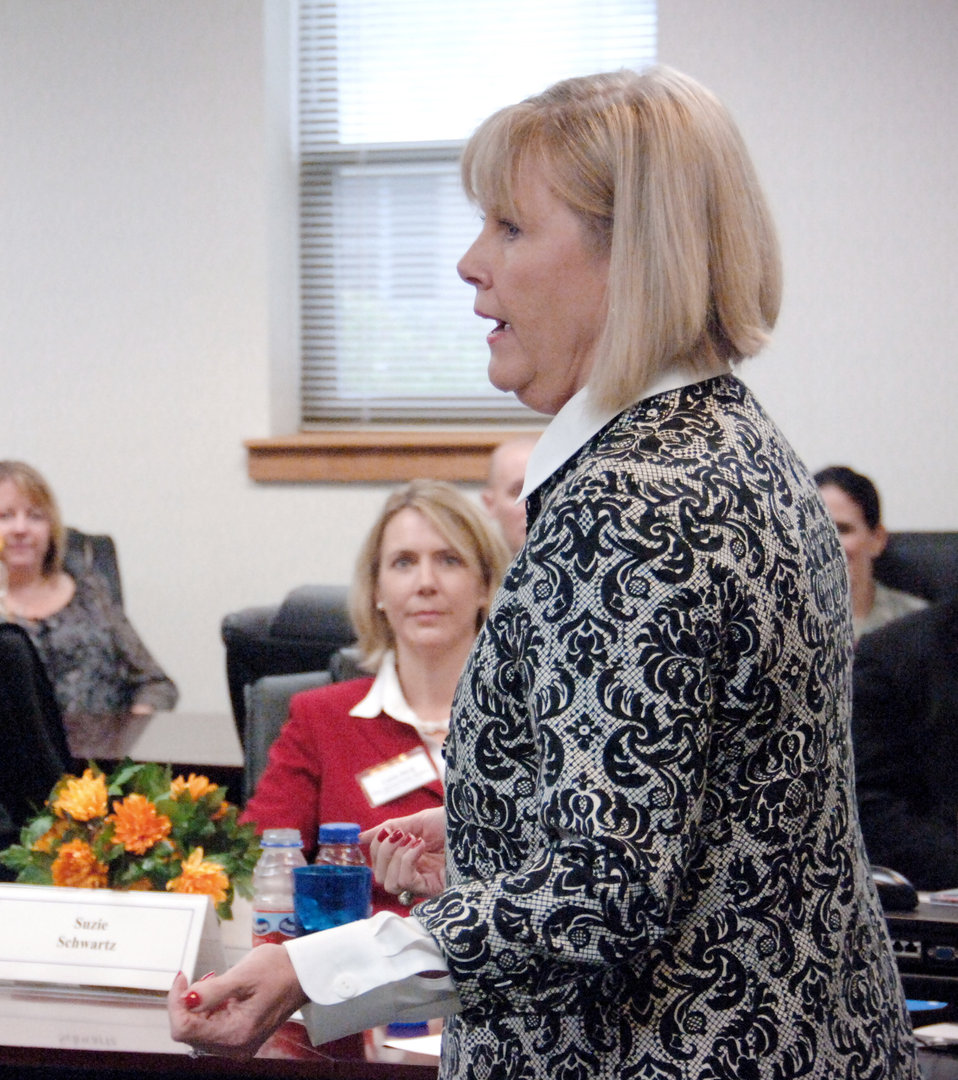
Mrs. Schwartz kicks off

Suzie Schwartz, wife of Air Force Chief of Staff Gen. Norton Schwartz, talks to Key Spouse Program participants at the Maxwell Airman and Family Readiness Center Oct. 23, 2009. Mrs. Schwartz shared her unique perspective at the Maxwell Key Spouse Forum as part of the emphasis on the Year of the Air Force Family.